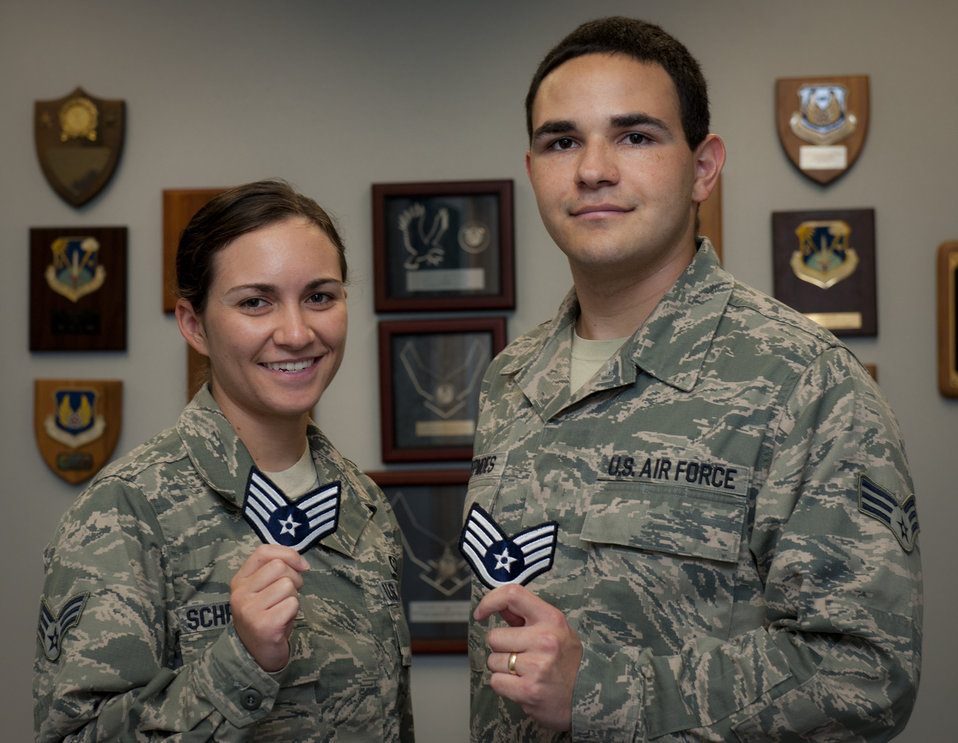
Making rank together

Senior Airmen Richard and Airel Schepmoes, a married couple in the 96th Test Wing, were both selected for promotion to staff sergeant this year. The couple is in the same career field and work in the same unit, the 96th Weather Flight. The Schepmoes are expected to sew on their new stripes by the end of 2012.